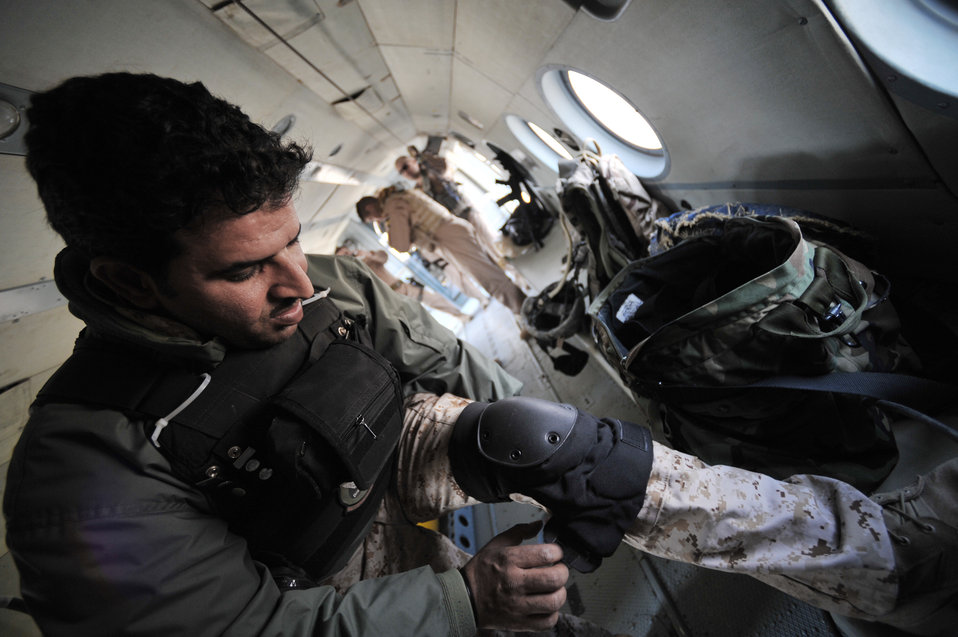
Airmen train Iraqi aerial gunners aim to protect helicopters, defend Iraq

An Iraqi Mi-17 helicopter aerial gunner dons his knee pads before engine-start March 2, 2010, at Camp Taji, Iraq.